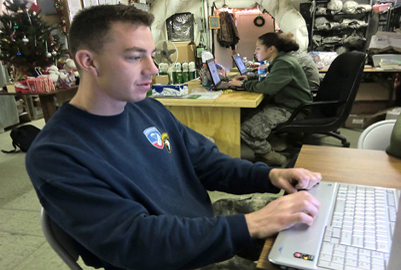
New program connects wounded warriors with loved ones

Army Staff Sgt. Kris Sapp uses a computer on the morale network Dec. 12, 2010, at the 455th Contingency Aeromedical Staging Facility at Bagram Airfield, Afghanistan. Sergeant Sapp is a 101st Airborne Division fire support specialist. He was wounded in Afghanistan's Ghazni province as the result of an improvised explosive device attack.